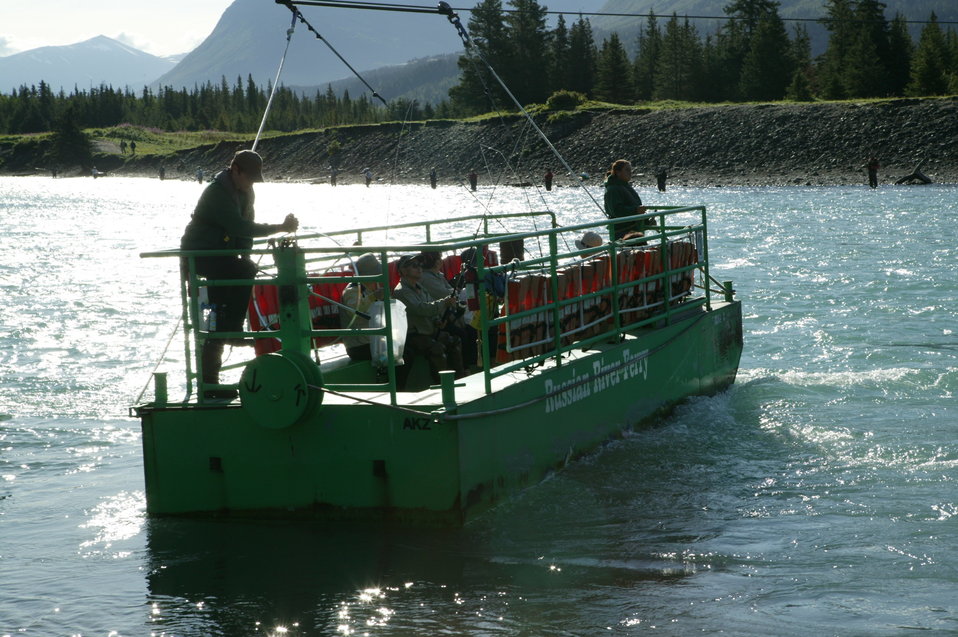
Russian River Ferry

The current of the swift Kenai moves the ferry across the river to the south bank. Anglers cross over to fish at the mouth of the Russian River for red (sockeye) salmon.